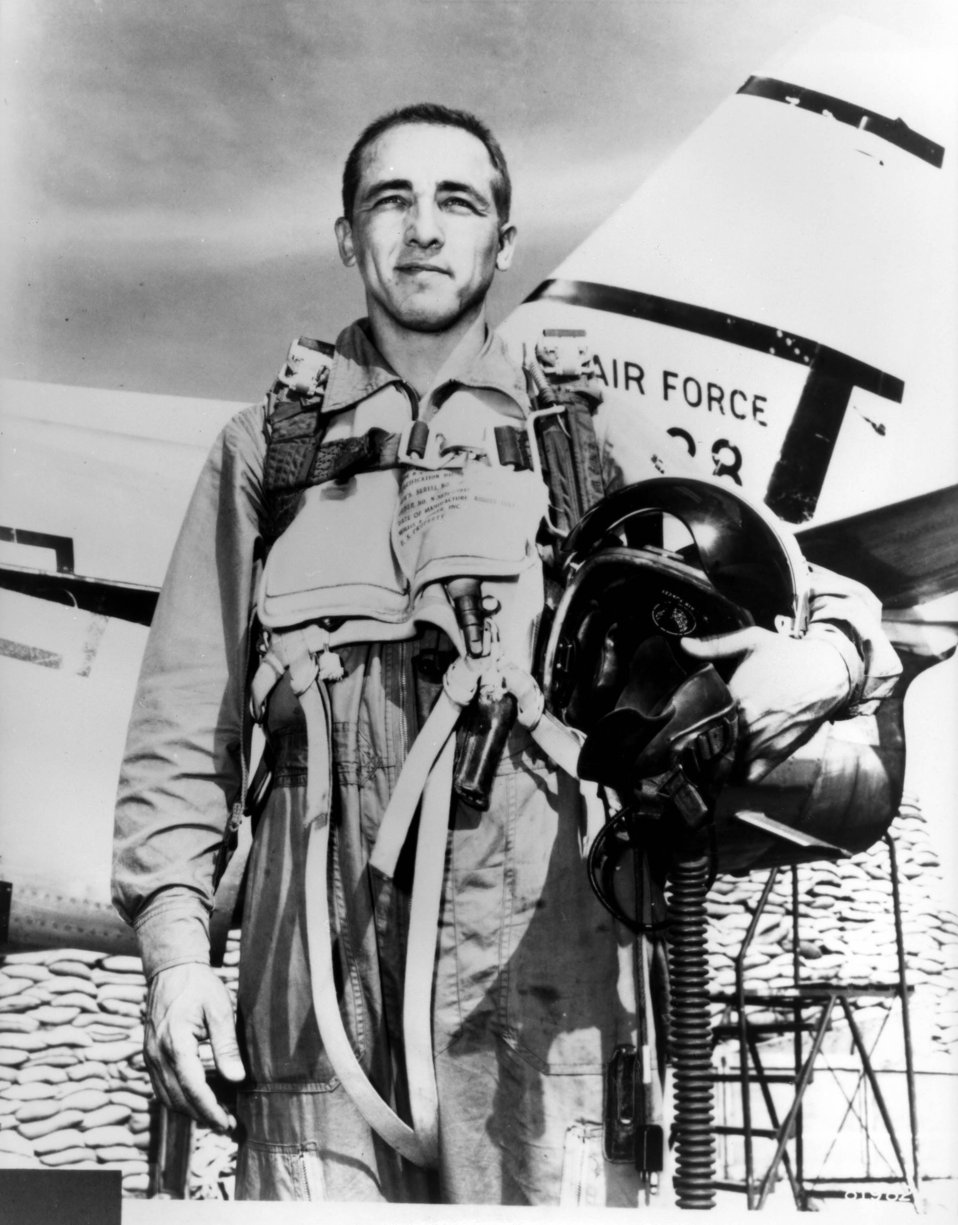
Robinson Risner

1950's -- Brigadier General Robinson Risner is credited with destroying eight MiG-15s and damaging another while assigned to the 336 Fighter Squadron. On September 21, 1952, then Major Risner scored double kills. He achieved Ace status on September 15, 1952, downing his fifth MiG-15. Brigadier General Risner came from Tulsa, Oklahoma. He entered the Air Force in 1944 and flew P-38, P-39, and P-40 fighers with the 30th Fighter Squadron in Panama from 1944 to 1946.